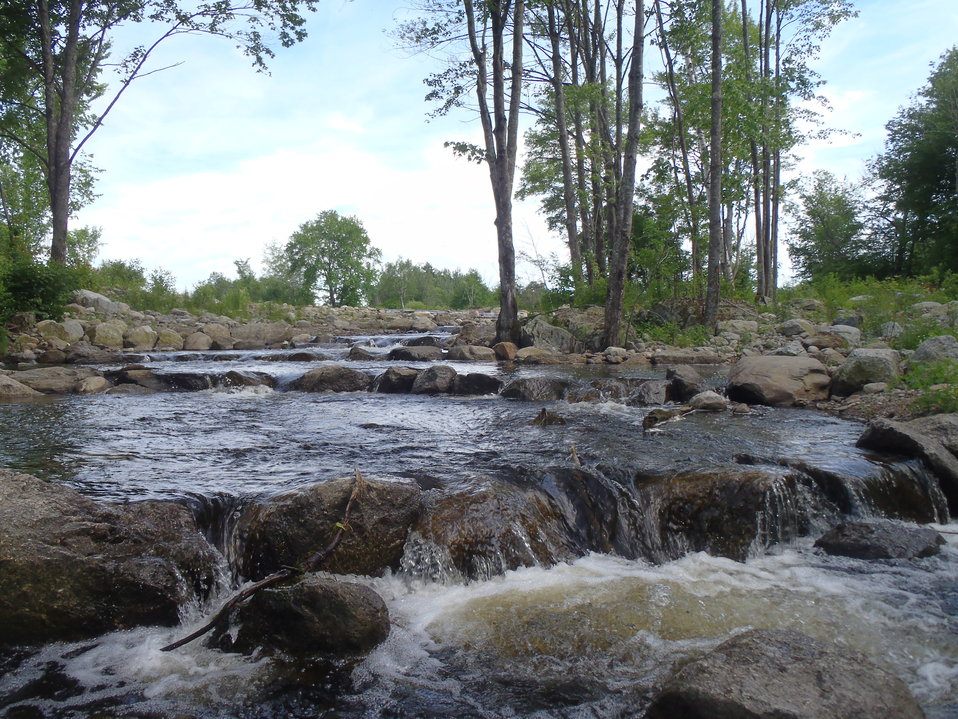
Nature-Like fishway for herring 3